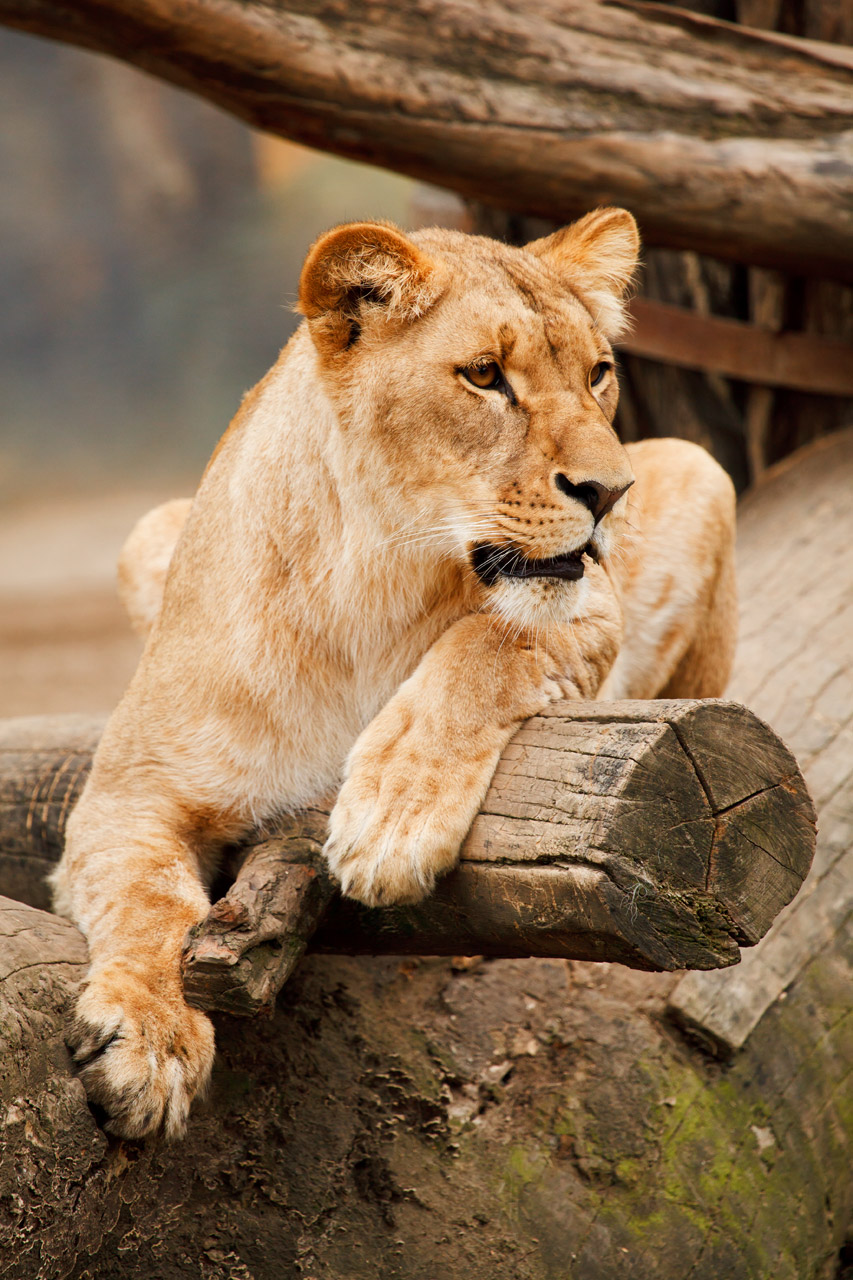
Lioness

Resting lioness on a log.